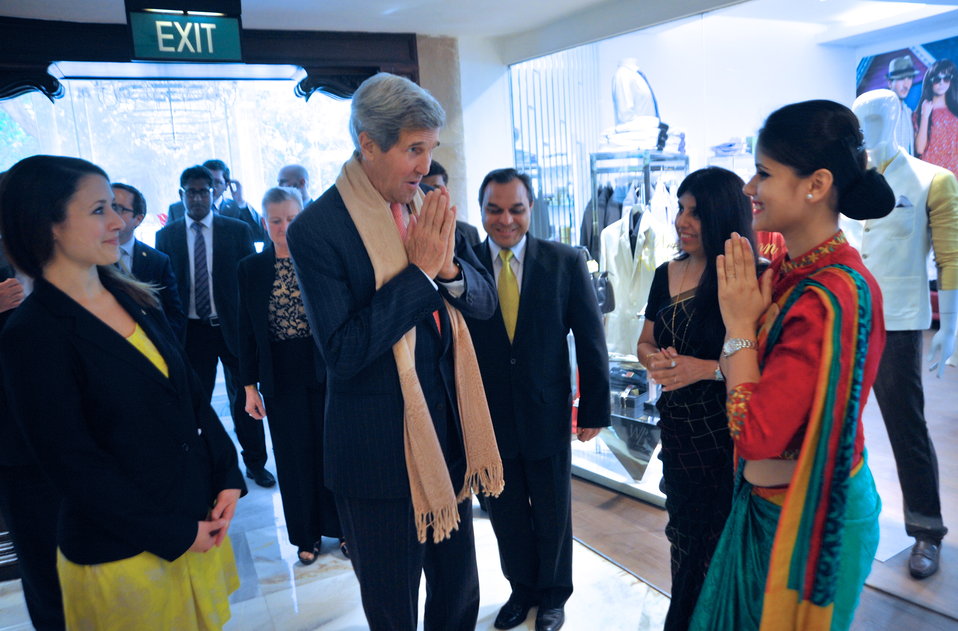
Secretary Kerry Participates in a Traditional Namaste Welcoming Ceremony

U.S. Secretary of State John Kerry participates in a traditional namaste welcoming ceremony upon his arrival to New Delhi, India on June 23, 2013.